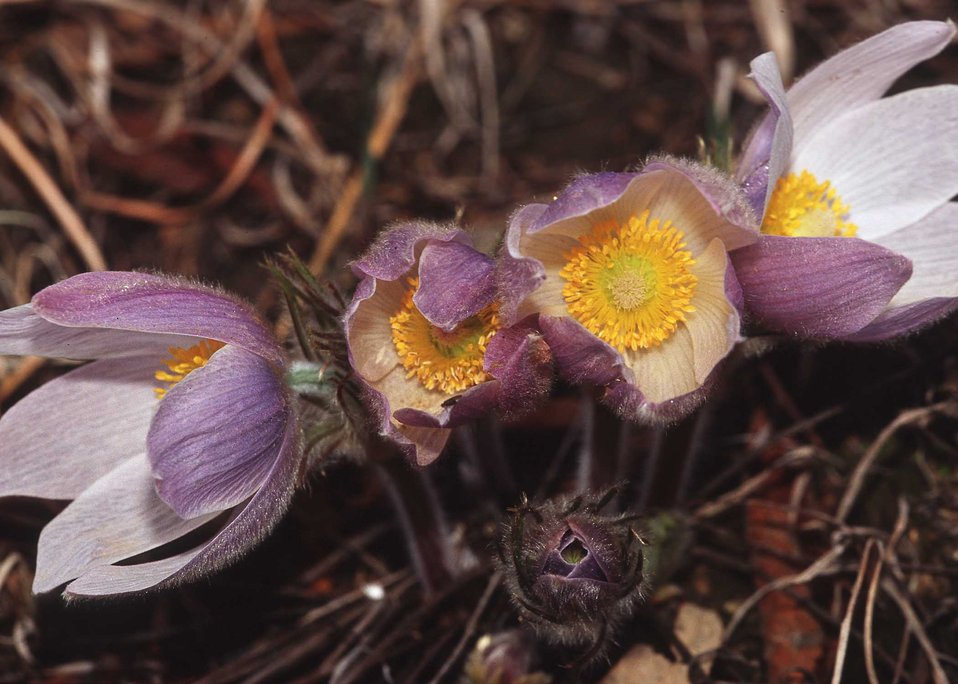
South Dakota's State Flower: Pasque.